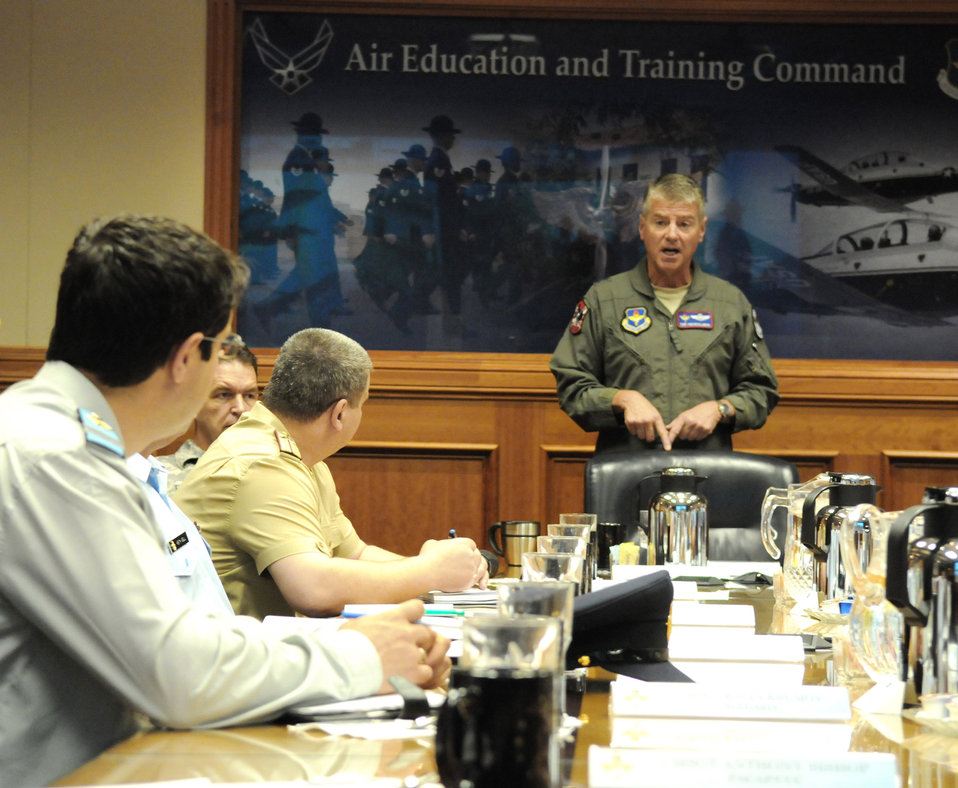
Senior enlisted leaders strengthen international bonds

Maj. Gen. Anthony Przybyslawski talks with senior enlisted leaders from partner nations during the 2009 Worldwide Senior Enlisted Leaders visit May 12-15 at Randolph Air Force Base, Texas. The visit was hosted by U.S. Air Force senior enlisted leaders to give their foreign counterparts a look at a U.S. Air Force enlisted member's career from start to finish. General Przybyslawski is the Air Education and Training Command vice commander,